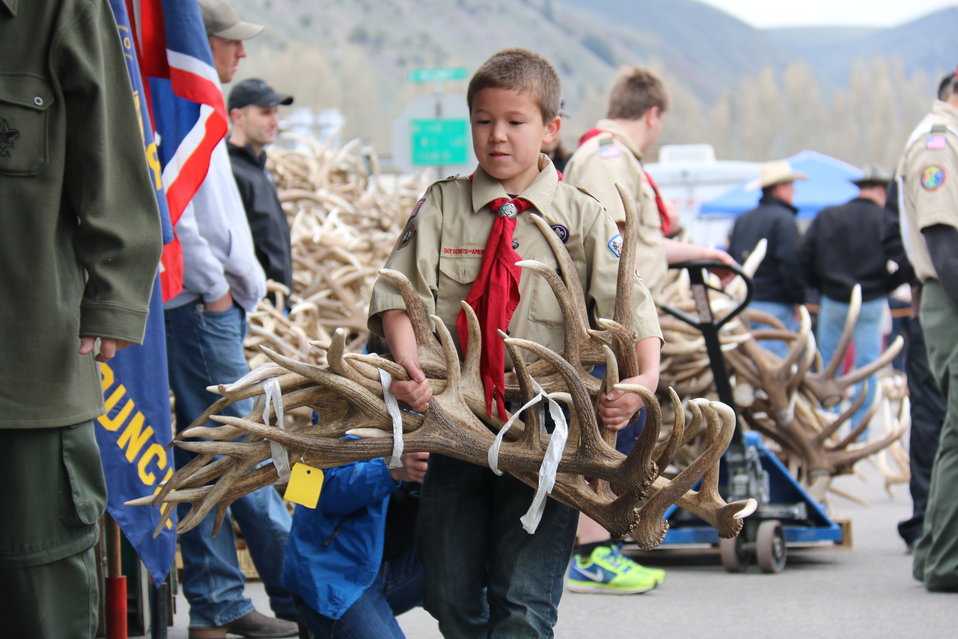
Heading to the Stage

A Scout heads to the stage with the next lot up for bid.